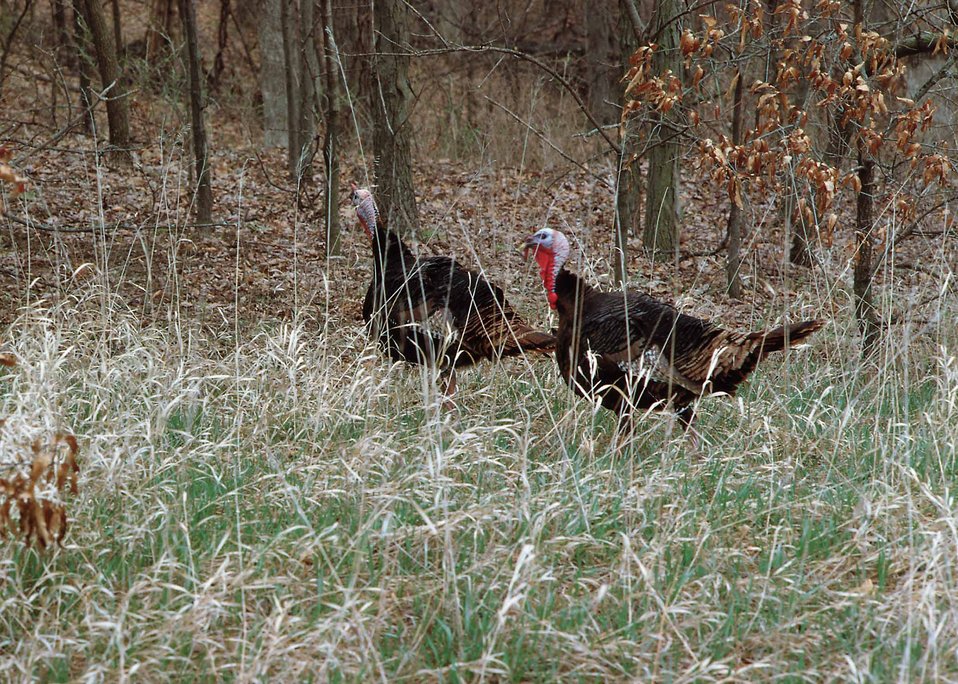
Wild turkeys in the woods in Van Buren County.